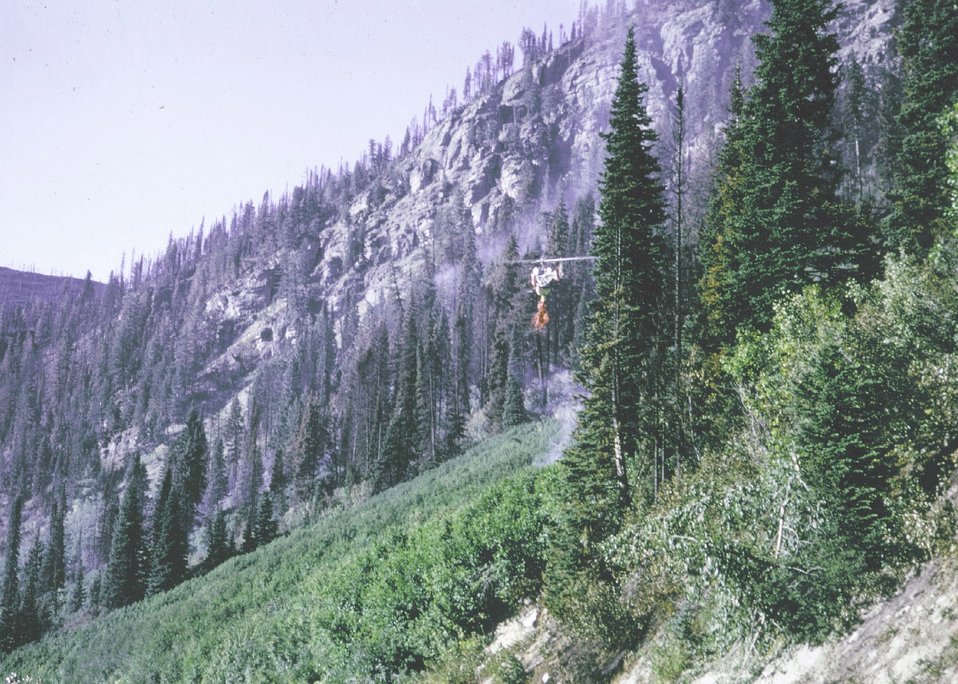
Retardant drop from helicopter with bucket in Yellowstone in 1988.